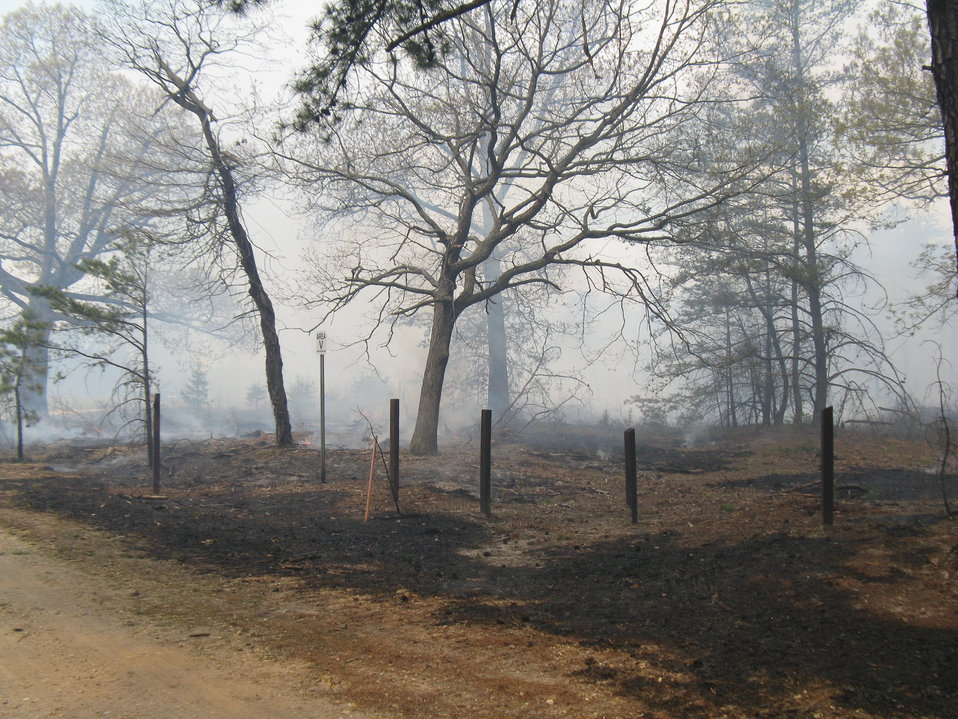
Burn Objectives Met

Laurel, Maryland, April 5, 2012: A controlled burn in an oak/pine forest successfully removed small pines in the understory to create open savannah. The burn was done at Patuxent Research Refuge's Savannah Restoration Unit to increase refuge species and habitat diversity. Specifically, the refuge hoped to increase density and diversity of rare darkling beetles and forest floor plants.